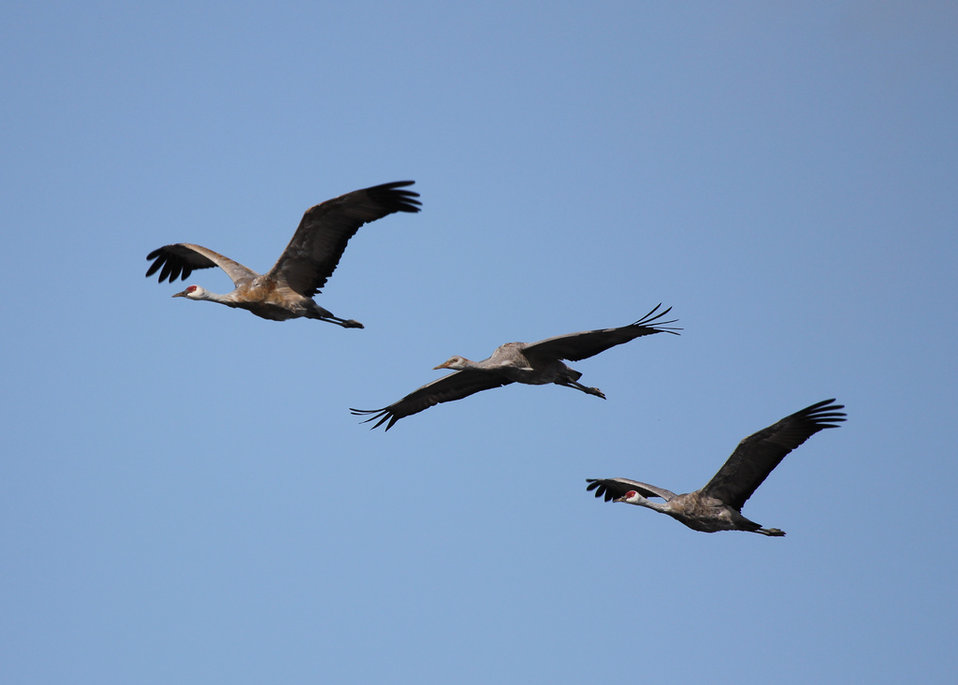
sandhill crane family at San Luis NWR

San Luis National Wildlife Refuge, CA
Nov. 6, 2011